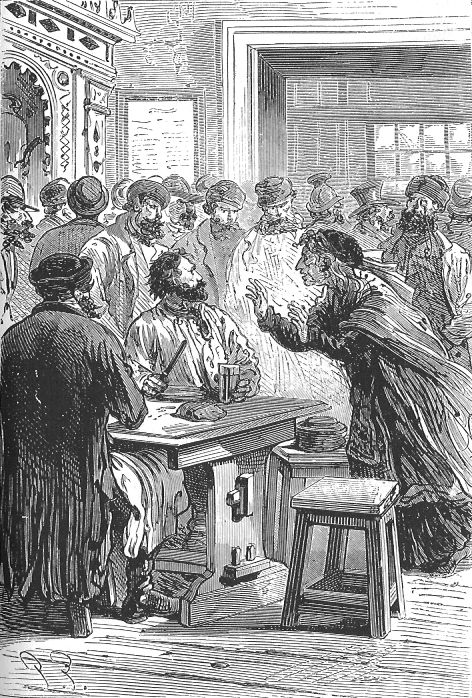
An illustration from the novel 'Michael Strogoff: The Courier of the Czar' by Jules Verne drawn by Jules Férat. Polski: Ilustracja powieści Juliusza Verne'a 'Michał Strogow, kurier carski' autorstwa Julesa Férata. Français : 'Michel Strogoff. Le courier du tzar', Jules Férat. Français : « Mon fils ! »